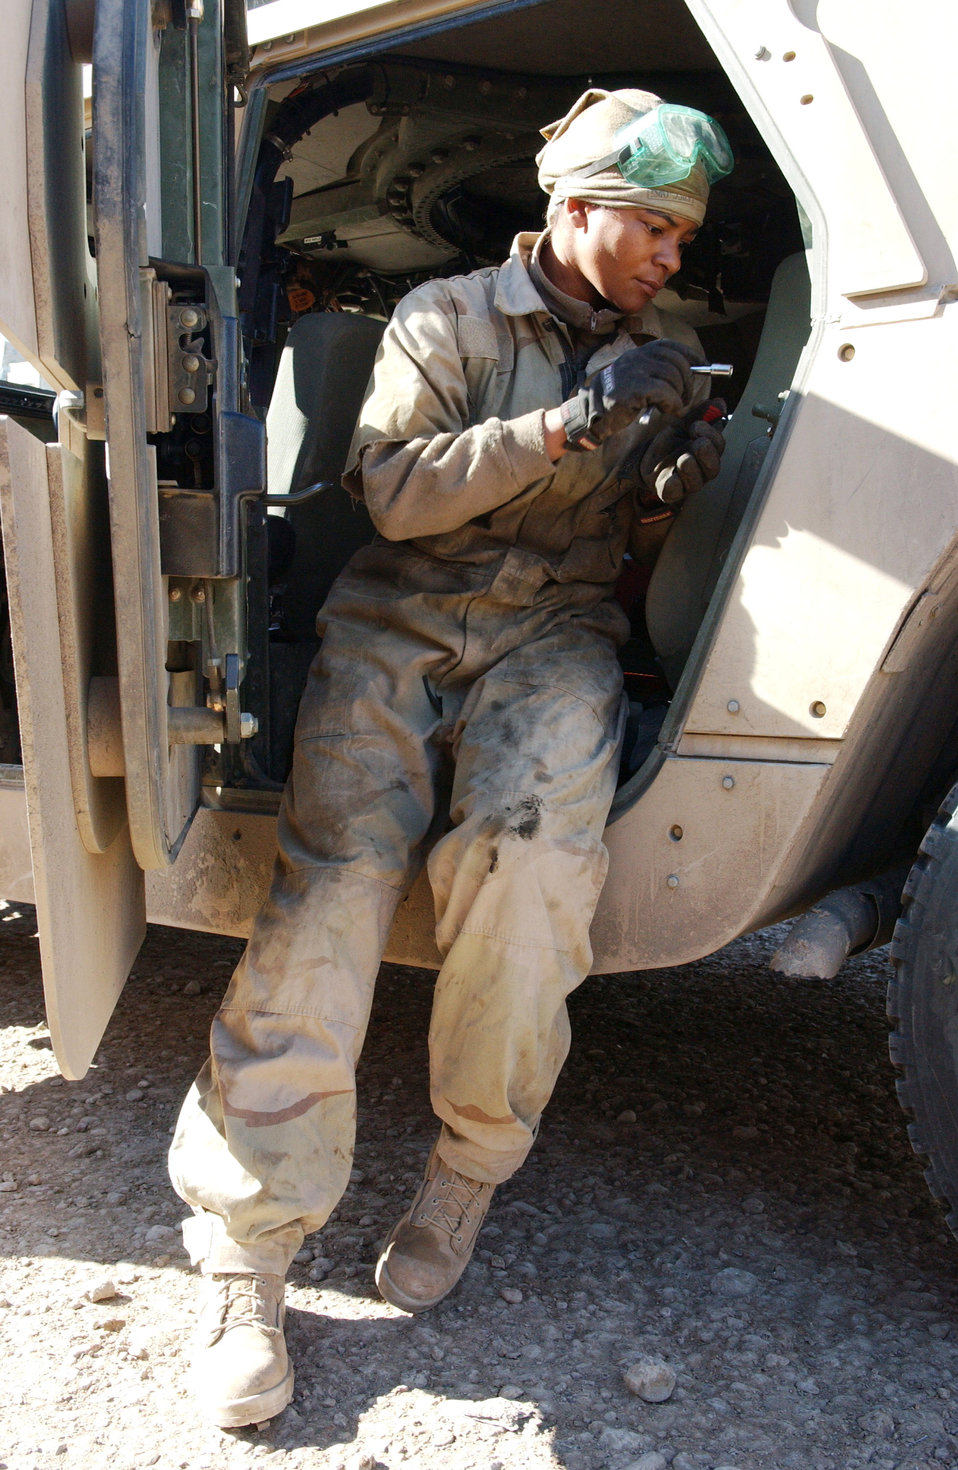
Patrolling Baghdad

Staff Sgt. Charethea Payne repairs a high mobility, multi-wheeled vehicle, Nov. 10. Sergeant Payne is with Detachment 7, 732nd Expeditionary Security Forces Squadron. The mission is to deploy into Baghdad's streets and assist Iraqi police in achieving self-sufficiency and enable orderly control of their battle space.